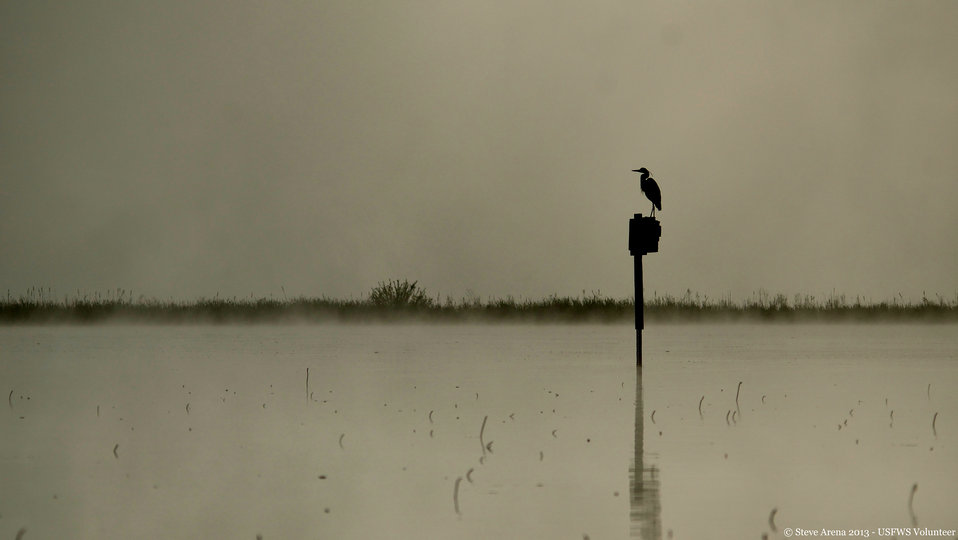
Great Blue Heron (Ardea herodias) at Dawn

Great Blue Heron, Great Meadows NWR, Concord, MA

Credit: Steve Arena/USFWS

05 May 2013